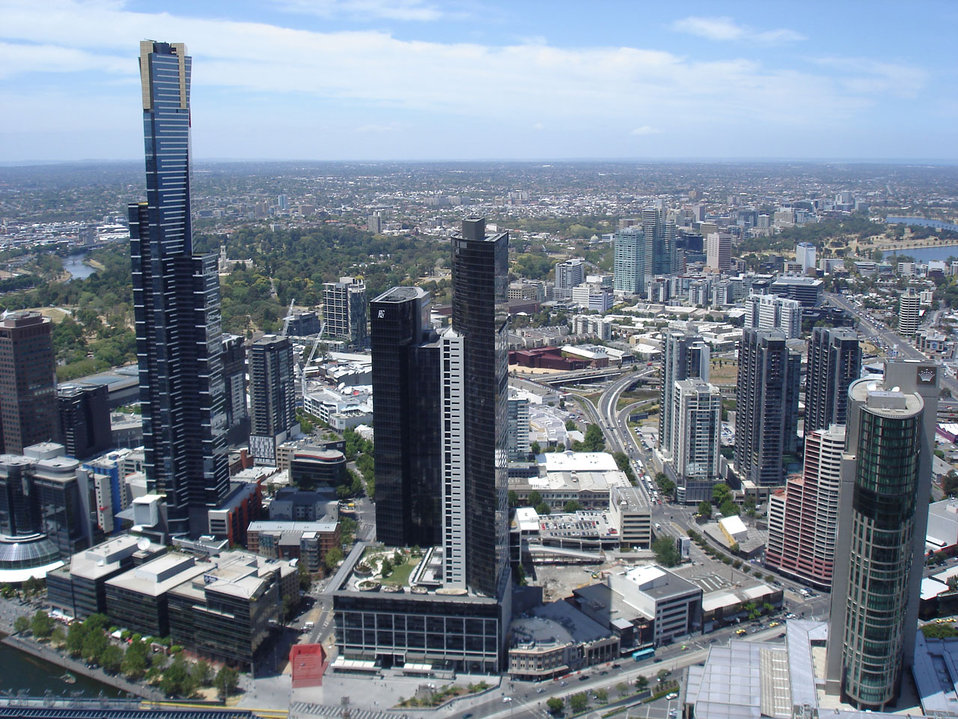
Melbourne australia

Melbourne city from rialto observation deck.